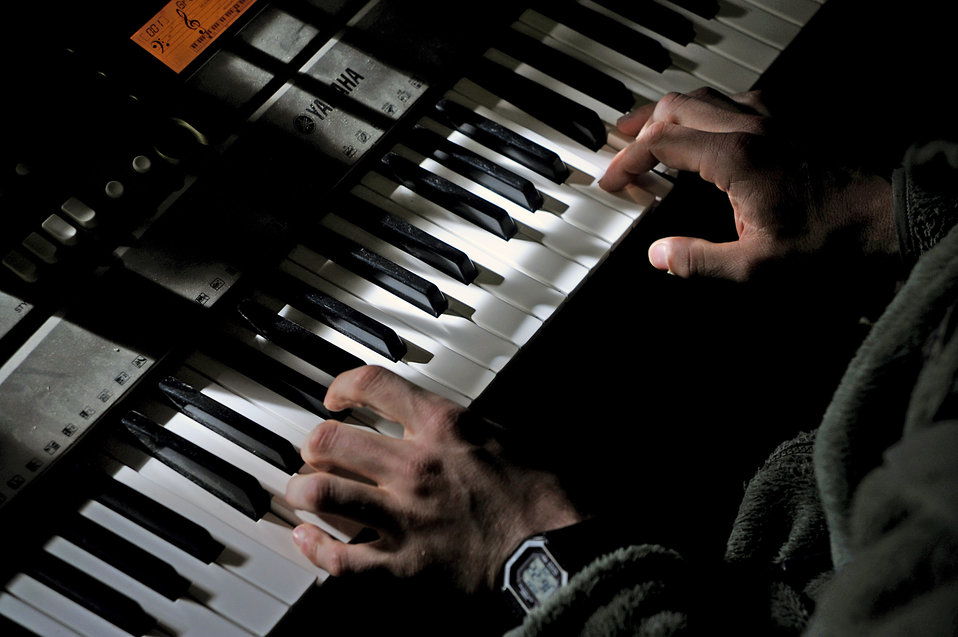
NCO brings calm over camp

Staff Sgt. Eric Began, a member of the Paktya Provincial Reconstruction Team, relaxes at Forward Operating Base Gardez by playing the piano. Sergeant Began taught himself how to play the keyboard as a way to pass time during his deployment to Afghanistan.